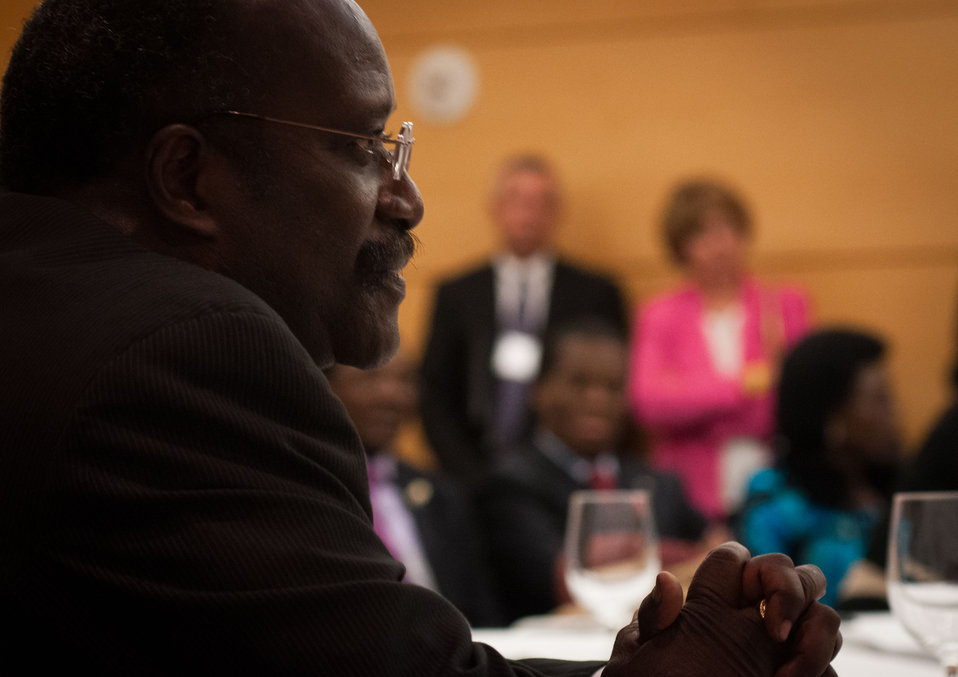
Ghana Minister of Food and Agriculture the Honorable Kweshi Ahwoi (second from left) makes his statement at the meeting of African Heads of State conference at the Ronald Reagan Federal Building in Washington, D.C., on Friday, May 18, 2012. The conference included the countries of Ethiopia, Ghana, Benin, and Tanzania.